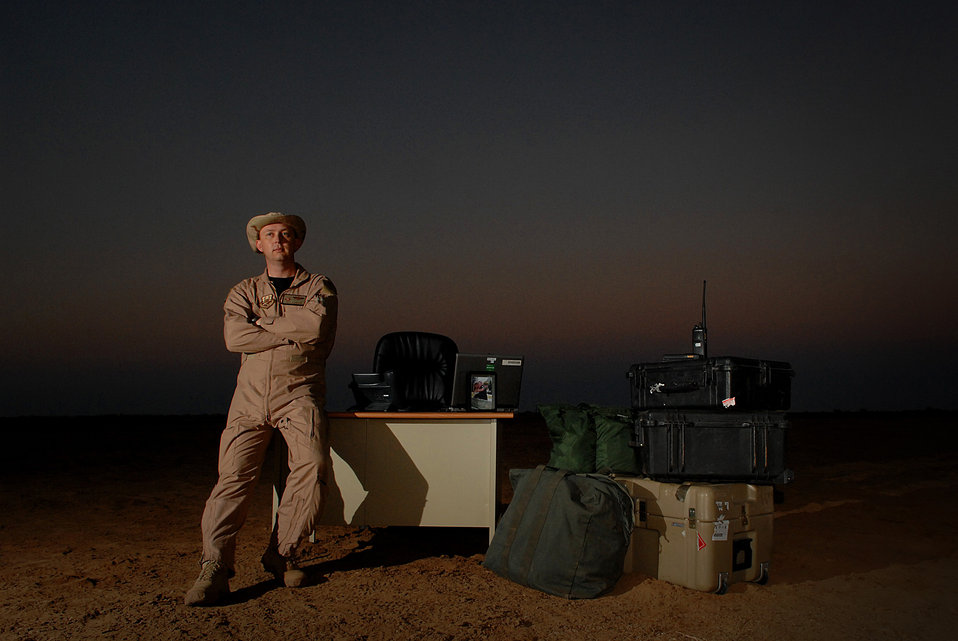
Air Component Coordinator

Maj. Jeff Ausborn might as well move his office outside next to the flightline. It might make his job of coordinating and tracking air support a bit easier.